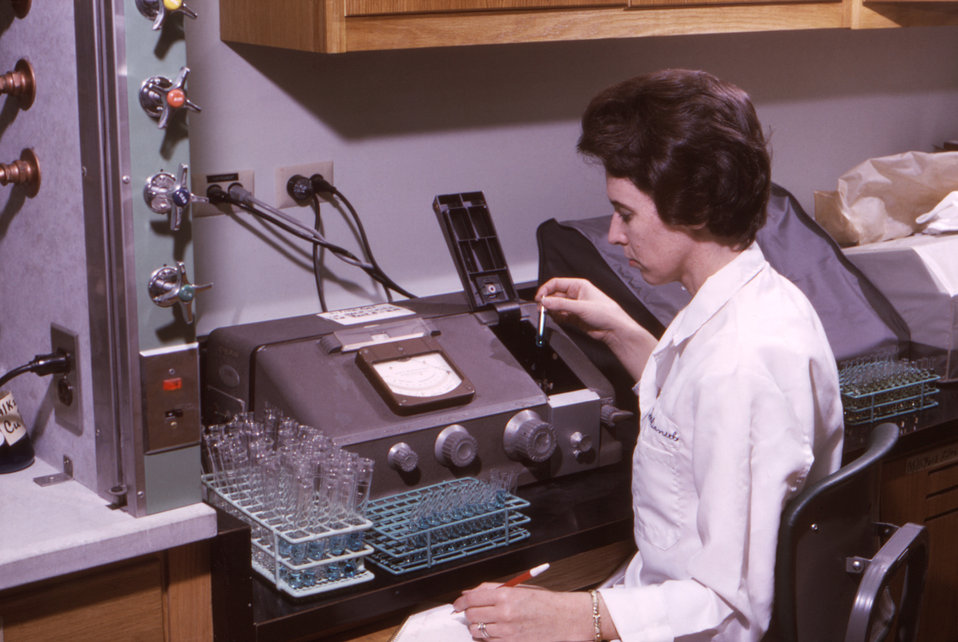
Using a Beckman B spectrophotometer, this historic 1965 photograph depicted a laboratory technician as she was conducting a colorimetric determination of the presence of glucose in her samples by using the Somogyi-Nelson method.